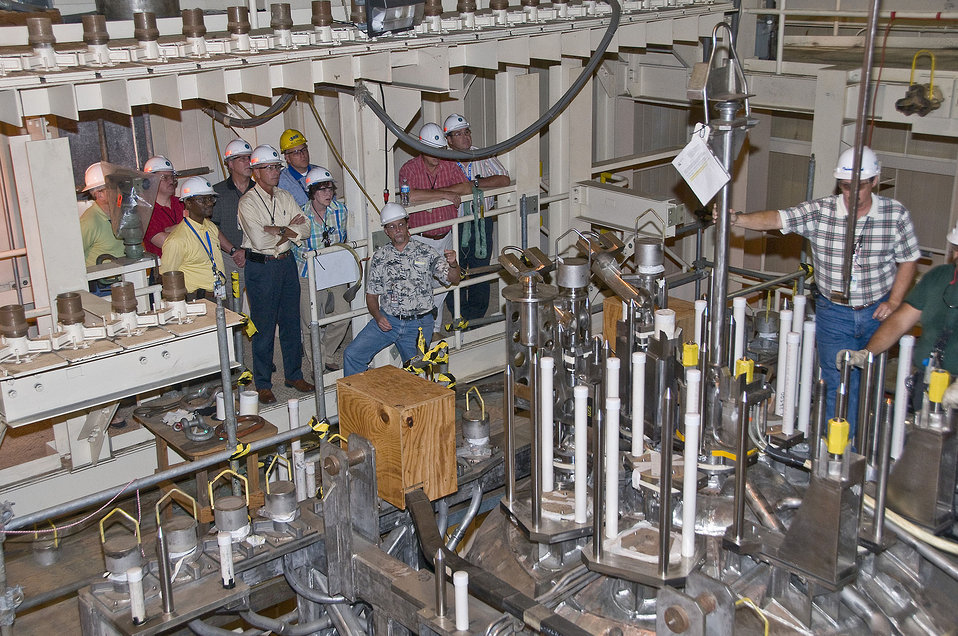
Recovery Act Helps Savannah River Site Progress toward Waste Tank Closures